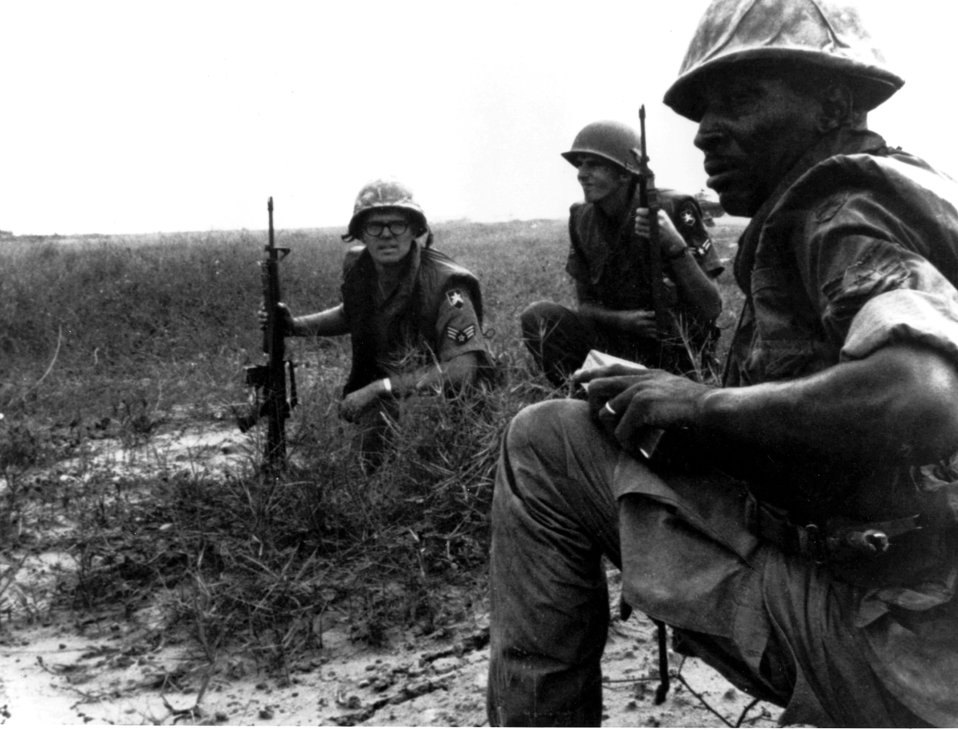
Air Force security policemen

1960s -- Air Force security policemen from Tan Son Nhut Air Base, watch for Viet Cong infiltration attempts along the base perimeter, as Technical Sgt. Philip H. Moon (foreground), 34, Stockton, Calif., awaits instructions from Central Security Control.